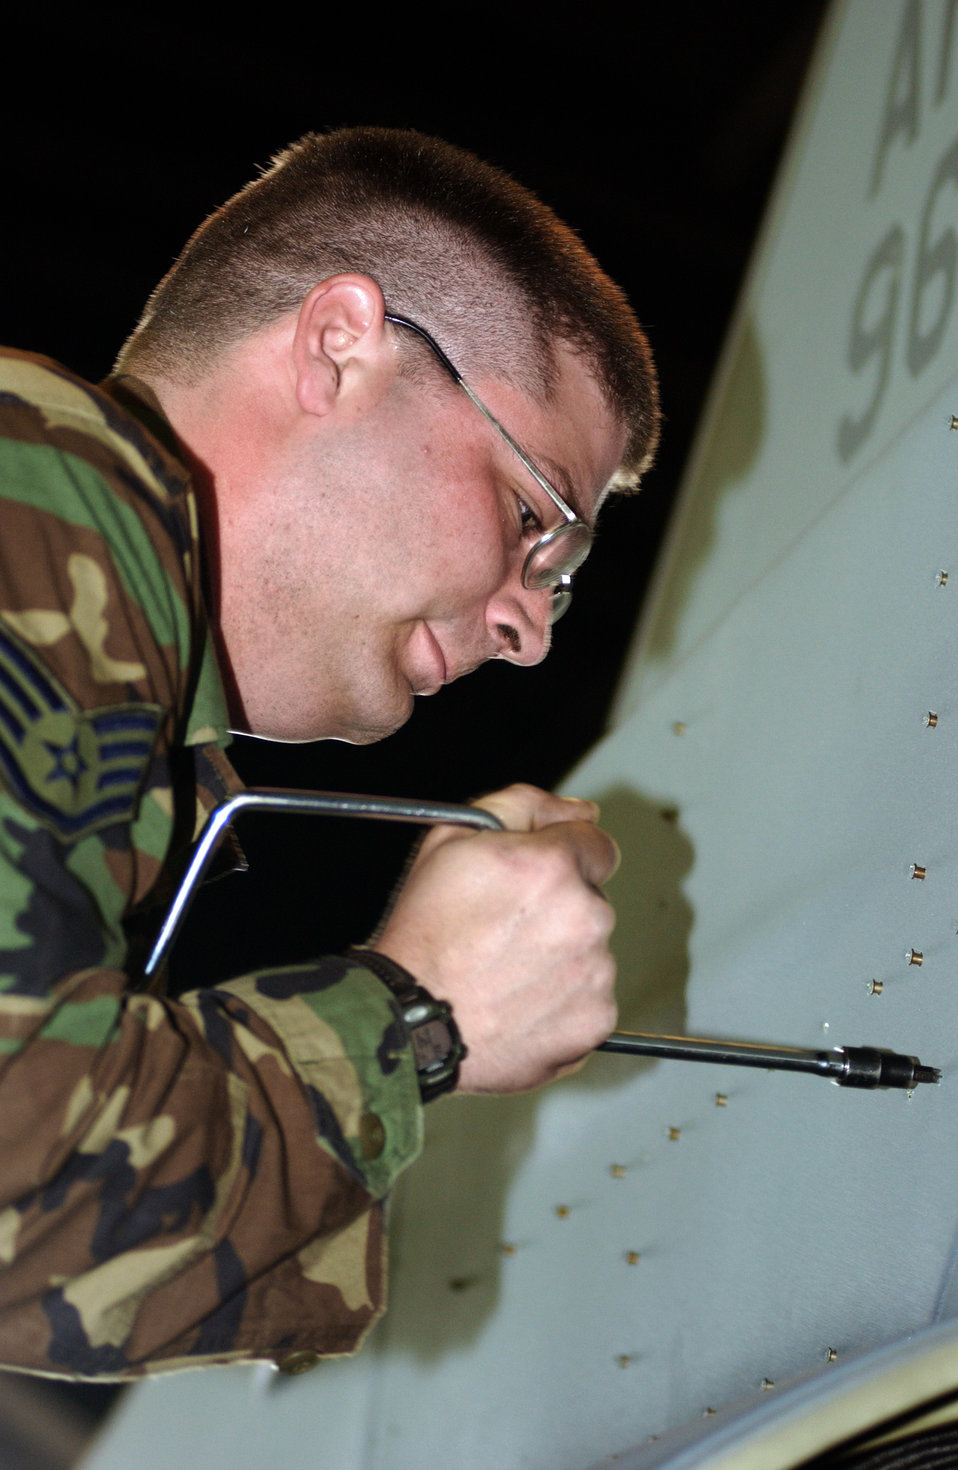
Falcon upgrades

SPANGDAHLEM AIR BASE, Germany -- Staff Sgt. Nathean Stoner breaks screws from the tail panel of an F-16 Fighting Falcon that was part of the common configuration implementation program here April 21. The six-month, $232,000,000 upgrade was used to enhance the avionics and electronics of the aircraft here. Sergeant Stoner is a crew chief with the 52nd Aircraft Maintenance Squadron.